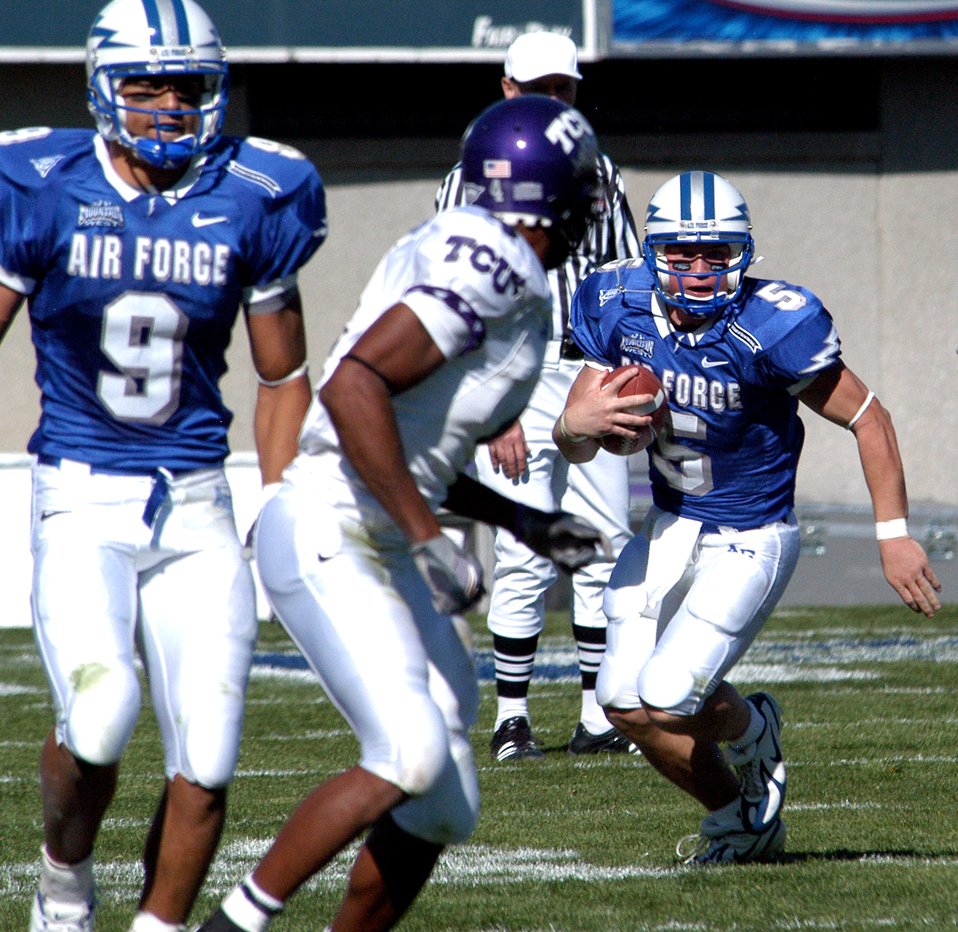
Falcons attack

U.S. AIR FORCE ACADEMY, Colo. -- Falcons quarterback Shaun Carney weaves his way through Texas Christian University defenders for extra yardage. TCU won, 48-10, Oct. 22.